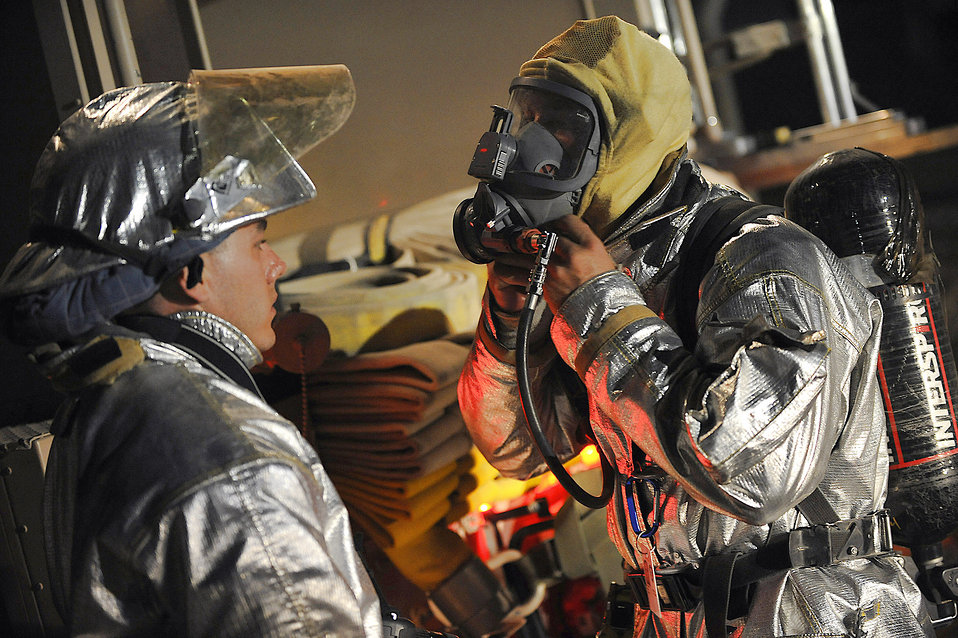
We didn't start the fire

Airman 1st Class Nicholas Smallwood helps Staff Sgt. Brian Plemons don protective equipment Oct. 22 at Joint Base Balad, Iraq. The Joint Base Balad Fire Department conducted the burn as part of a live-fire training scenario to give individual firefighters experience using hose patterns on interior fires. Both Airmen are deployed to the 332nd Expeditionary Civil Engineer Squadron from MacDill Air Force Base, Fla.